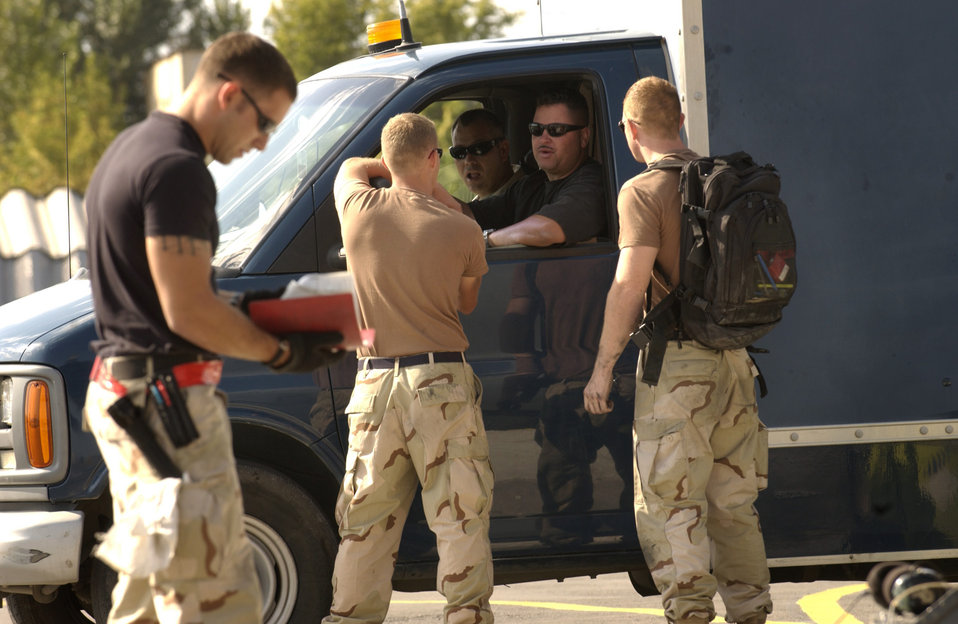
Maintaining the Herc

MANAS AIR BASE, Kyrgyzstan -- Senior Airman Derek Smith and Airman 1st Class Alex O'Donnell brief their supervisor, Tech Sgt. Eric Bradley, on the status of a recently repaired C-130 Hercules. They are aircraft maintainers assigned to the 376th Expeditionary Air Maintenance Squadron and are deployed from Little Rock Air Force Base, Ark.